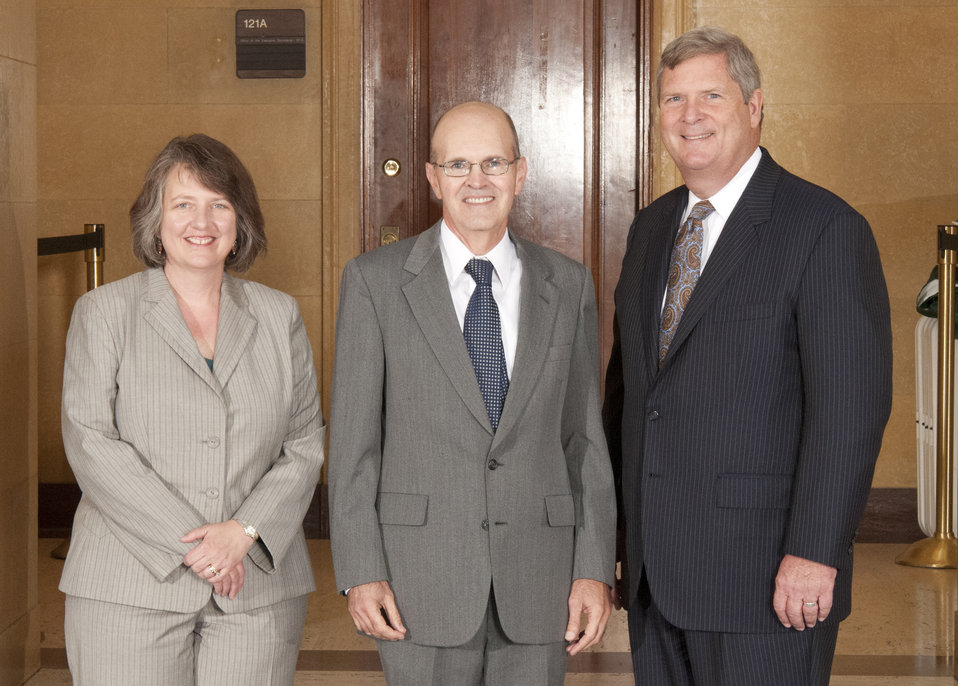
Agriculture Secretary Tom Vilsack and Deputy Agriculture Secretary Kathleen Merrigan with Wiliam Merkel, Natural Resource Conservation Service (NRCS) during the Honor Award group photography on the patio of the U.S. Department of Agriculture in Washington, D.C. on Wednesday, Sept. 12, 2012.